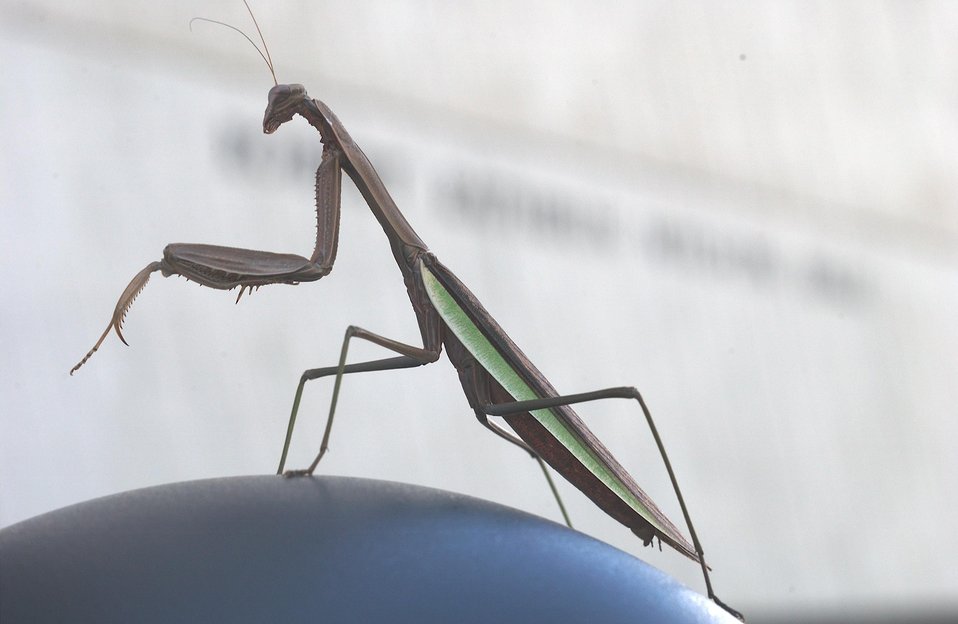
PRAYING MANTIS ON A LAMP IN FRONT OF WILSON HALL AT THE FERMI NATIONAL ACCELERATOR LABORATORY.

IN AN EFFORT TO RECOGNIZE AND PRESERVE ITS PRAIRIE HERITAGE, FERMILAB ENCOURAGES NATURAL PRAIRIE LIFE AND VEGETATION. THE FERMI NATIONAL ACCELERATOR LAB ADVANCES THE UNDERSTANDING OF THE FUNDAMENTAL NATURE OF MATTER AND ENERGY BY PROVIDING LEADERSHIP AND RESOURCES OF QUALIFIED RESEARCHERS TO CONDUCT BASIC RESEARCH AT THE FRONTIERS OF HIGH ENERGY PHYSICS AND RELATED DISCIPLINES.